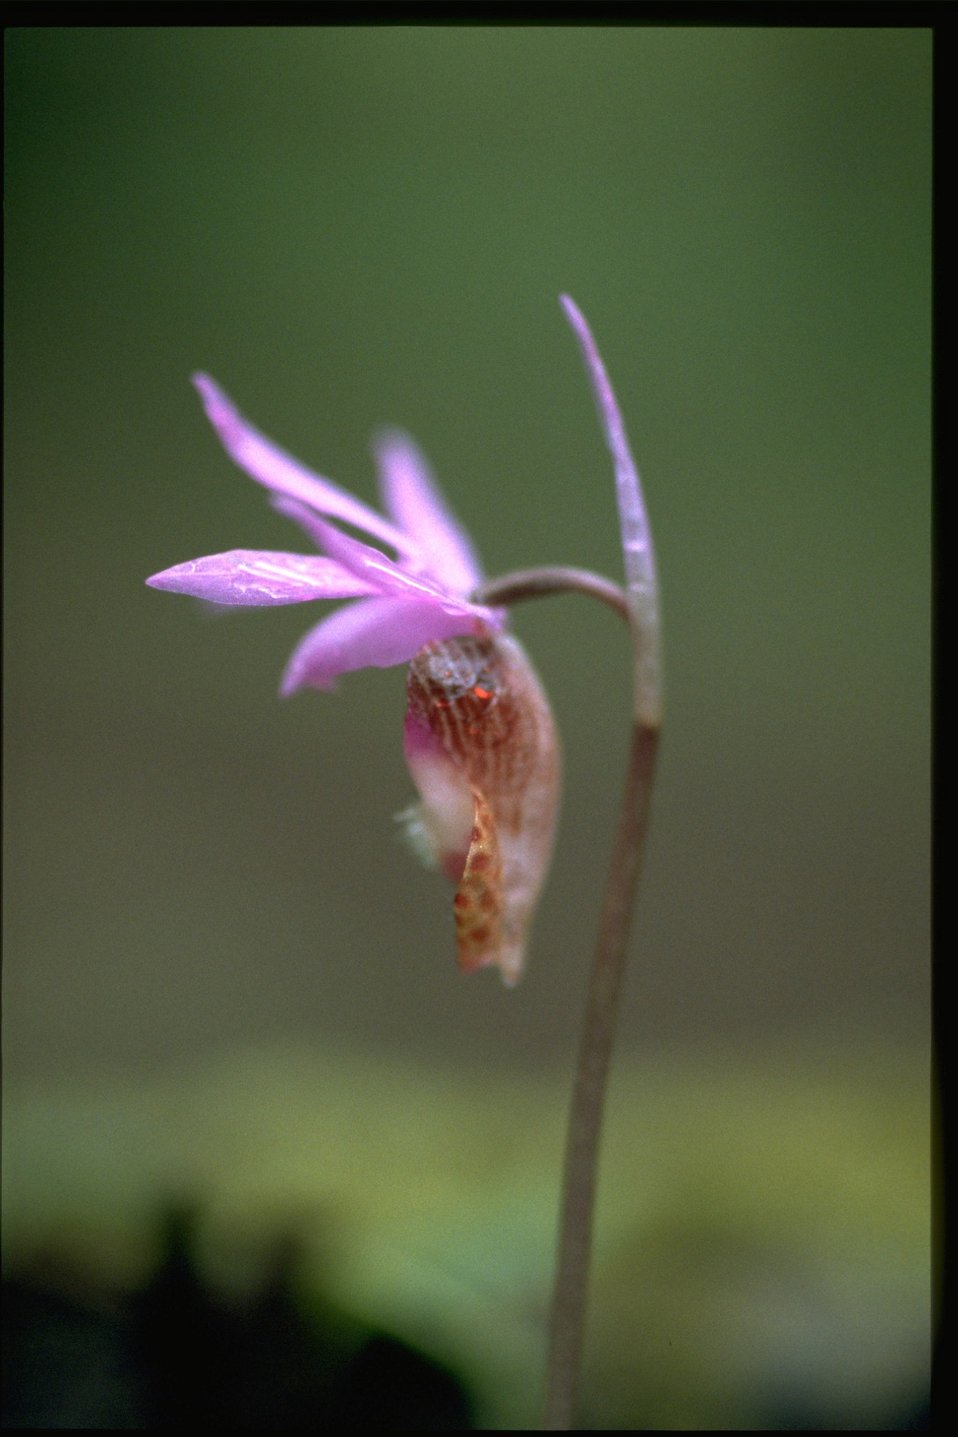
Closeup shot of .